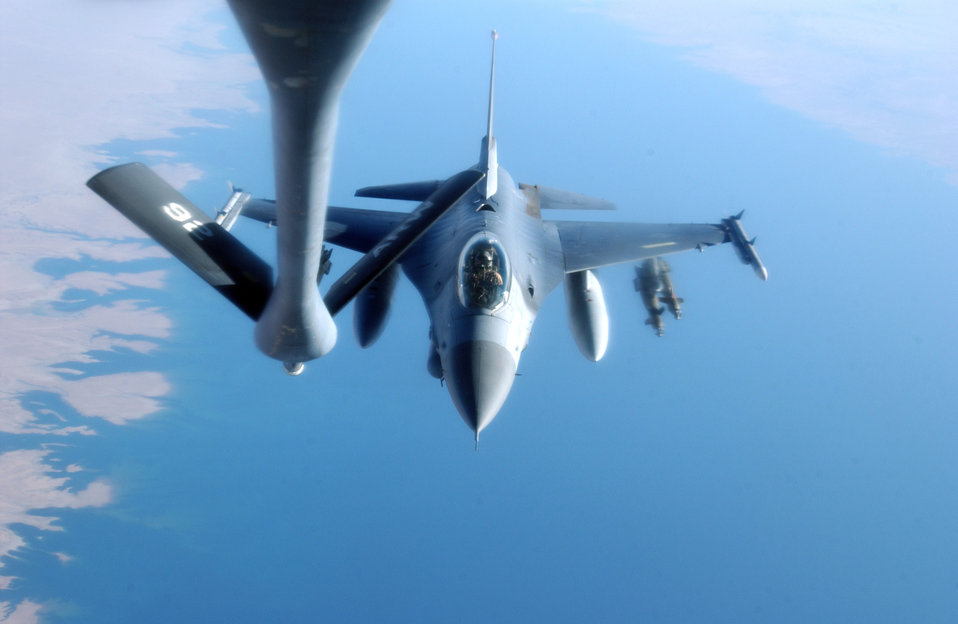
Gas 'n go

SOUTHWEST ASIA -- An F-16 Fighting Falcon prepares to refuel from a KC-135 Stratotanker on Aug. 16. The F-16 is from the 332nd Air Expeditionary Wing at Balad Air Base, Iraq, and the KC-135 is from the 92nd Air Refueling Wing at Fairchild Air Force Base, Wash.